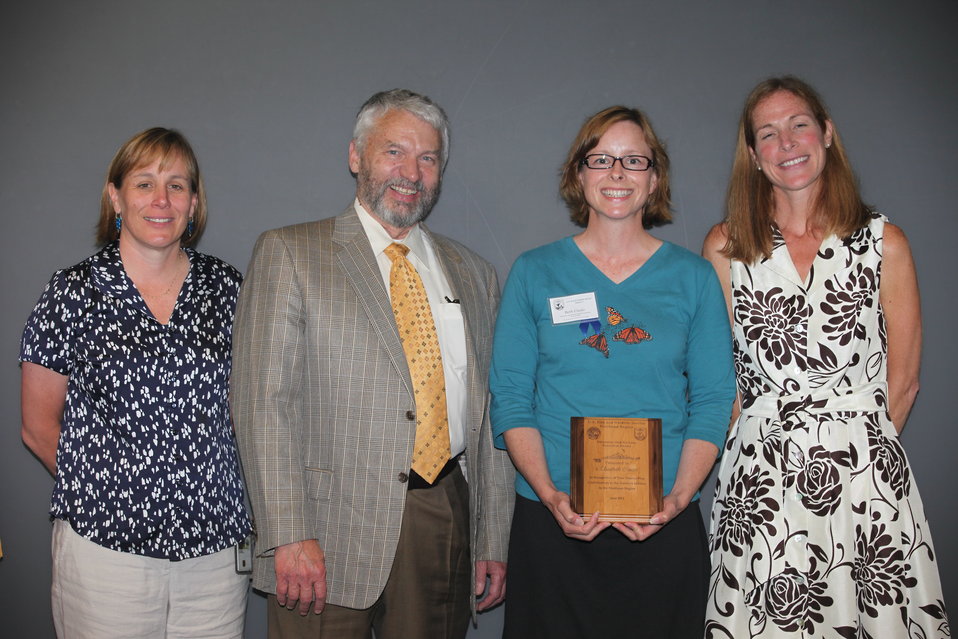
Elizabeth Ciuzio of the New Jersey Field Office recieved the Promoting Our Natural Resouces Award.
From left to right: Deputy Regional Director Deb Rocque, Deputy Director Rowan Gould, Elizabeth Ciuzio, and Regional Director Wendi Weber